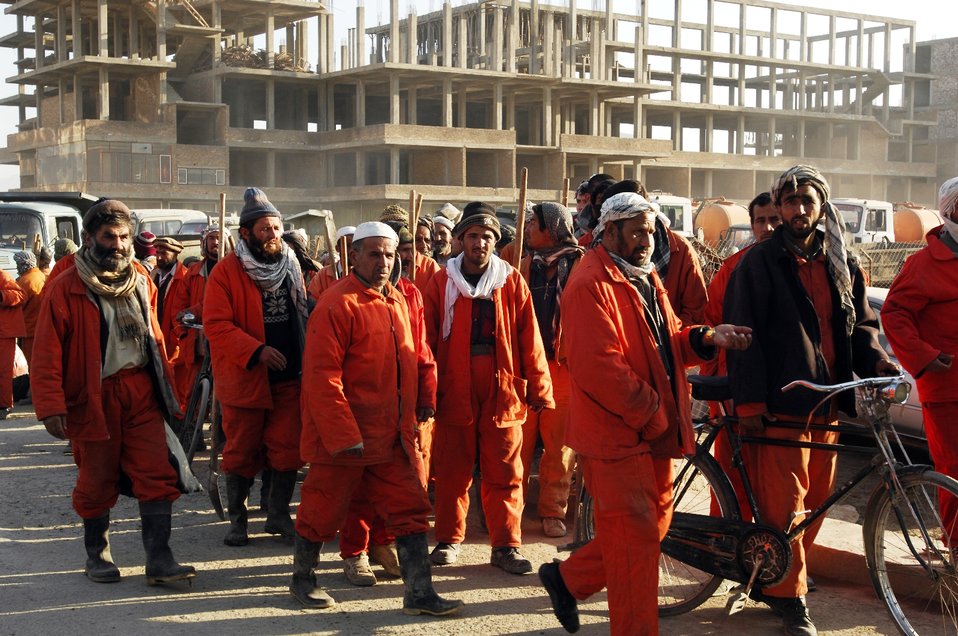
Care59